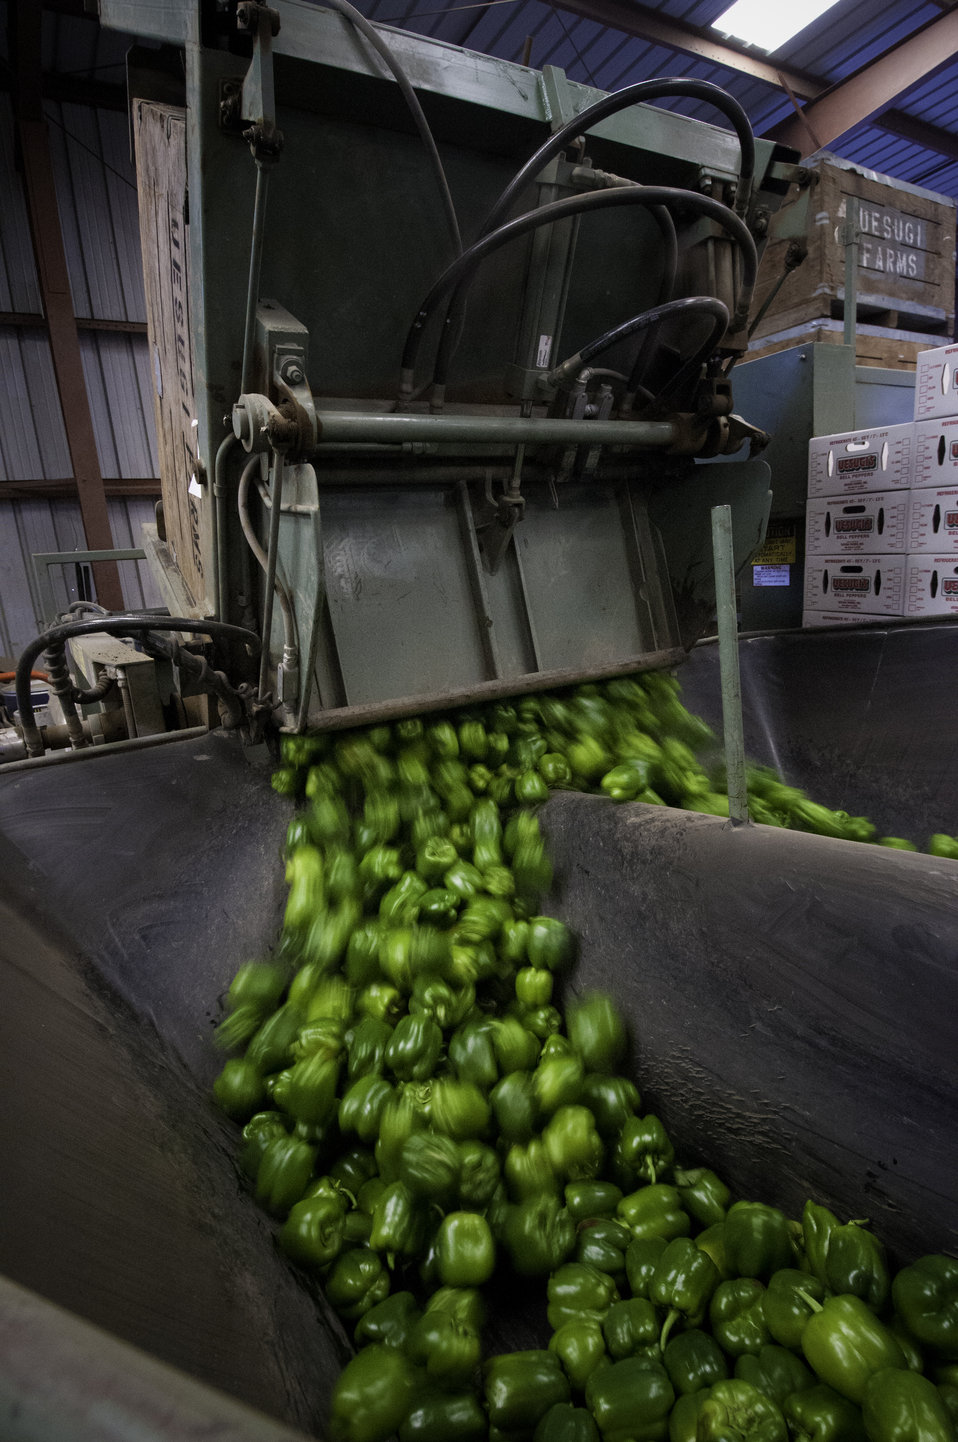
Migrant workers process green peppers on Uesugi Farms in Gilroy, CA on Wednesday, Aug. 28, 2013.